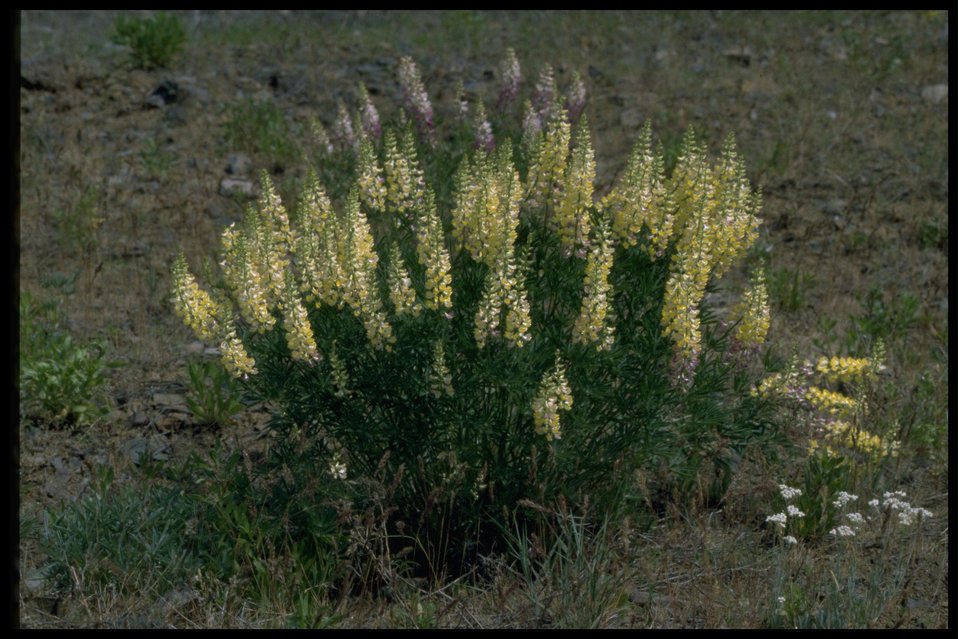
Farshot of Bigleaf Lupine - yellow variant.